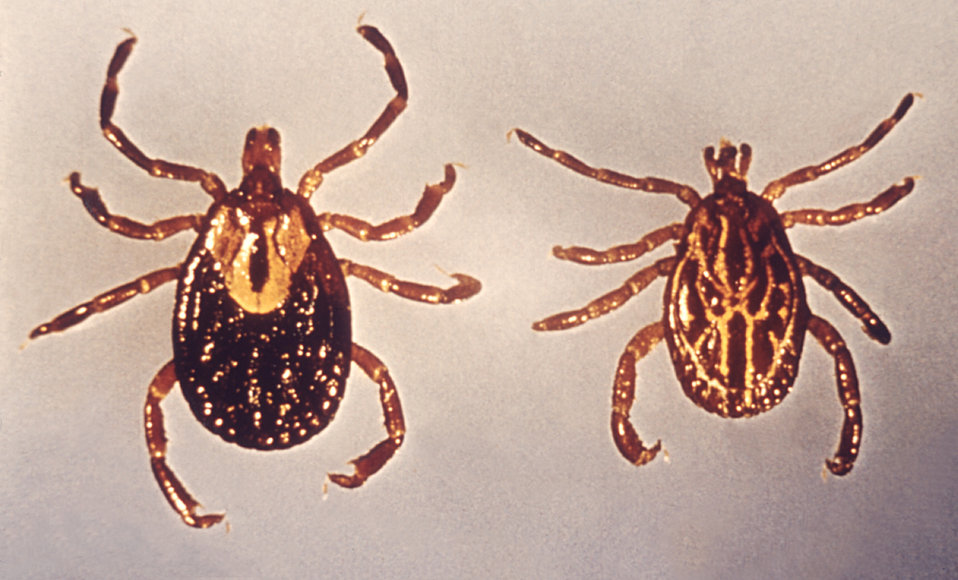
These two ticks are members of the 'hard tick' genus Amblyomma and possess elongated mouthparts.